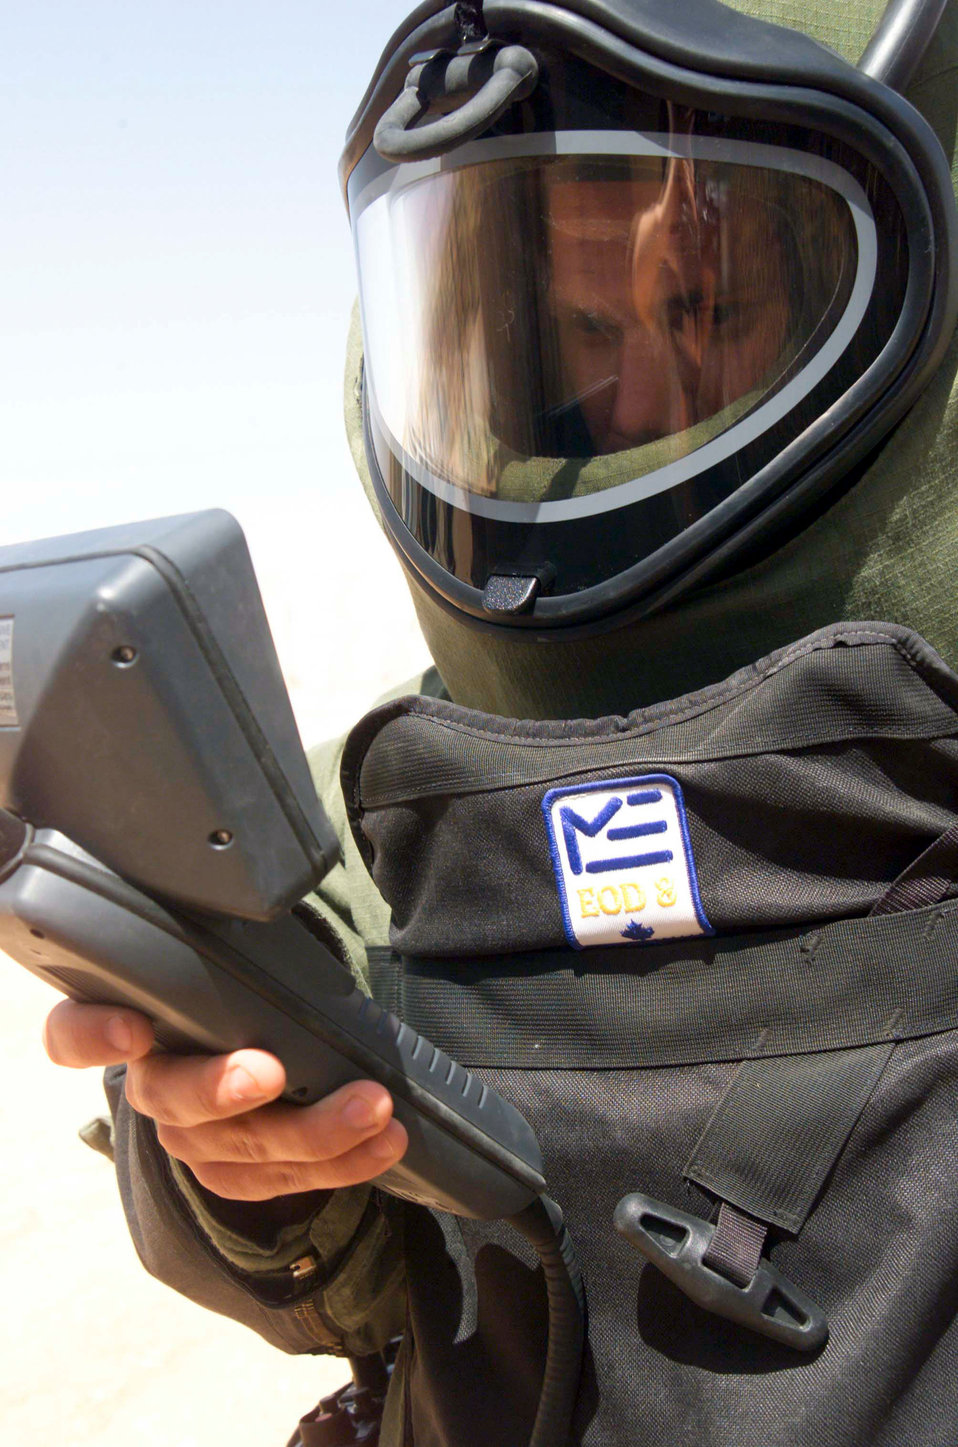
Smells funny to me

OPERATION IRAQI FREEDOM -- Senior Airman Nate Wills, an Explosive Ordinance Disposal Journeyman with the 405th Expeditionary Civil Engineer Squadron inspects contents of a suspected improvised explosive device during Operation Iraqi Freedom at a forward deployed location in Southwest Aisa on April 9.